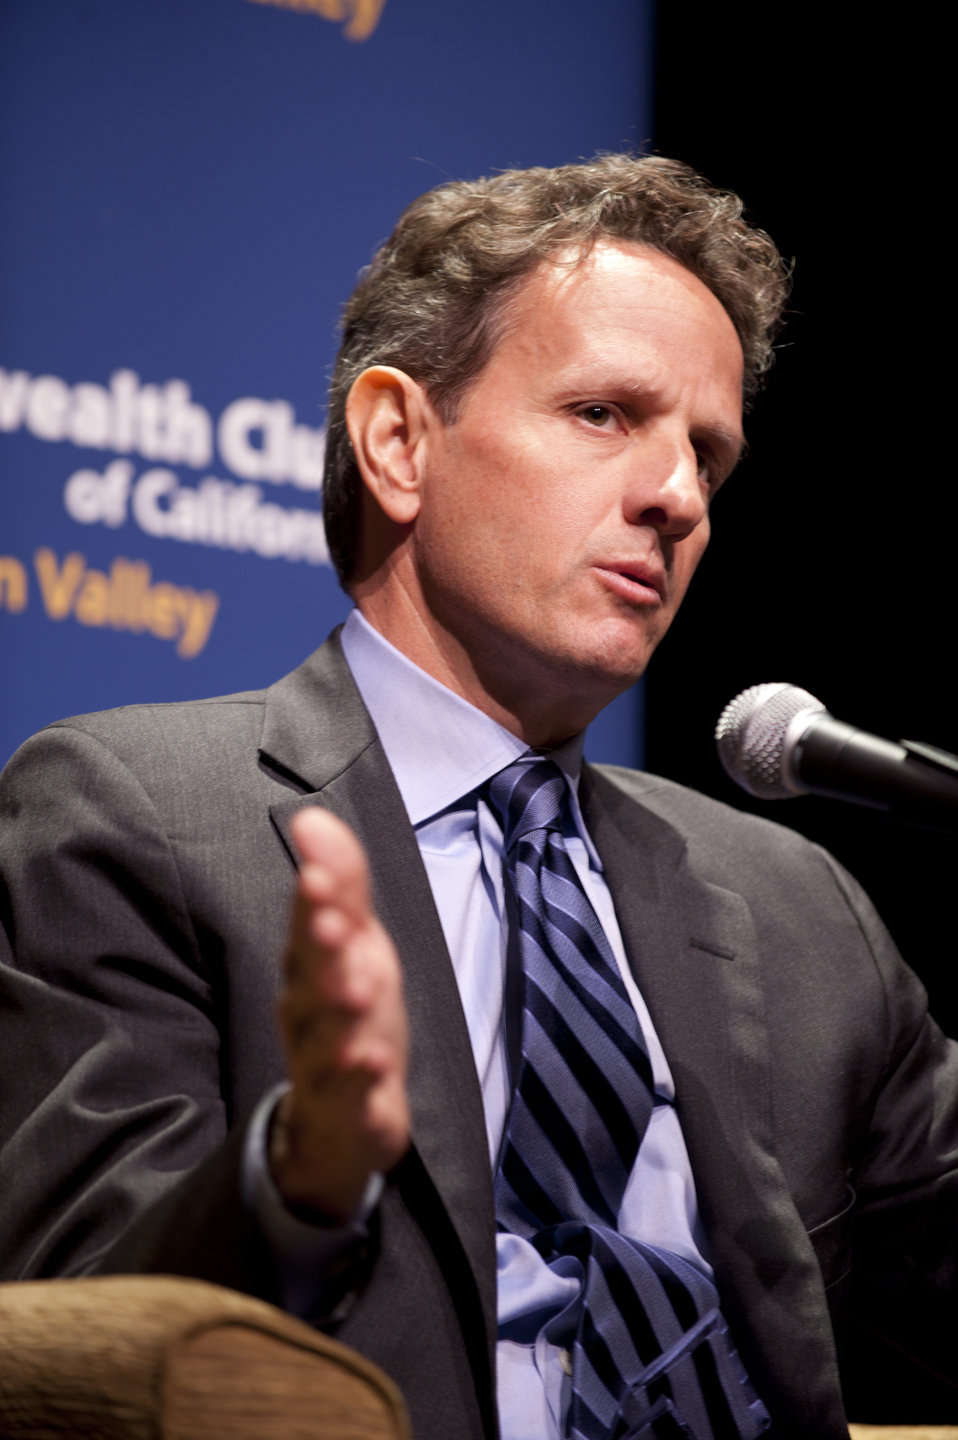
'A Conversation with Secretary Tim Geithner' hosted by the Commonwealth Club, 10/18/10

Following brief remarks, Secretary Geithner participated in a question and answer session with the audience at an event hosted by the Commonwealth Club in Palo Alto, CA.